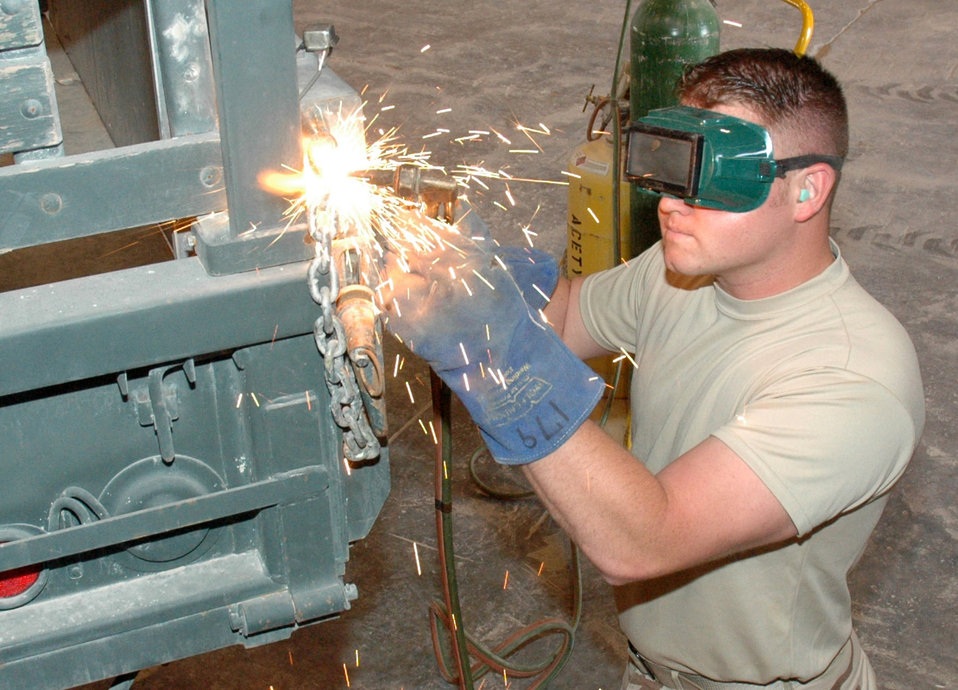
RED HORSE logistics hub supports Airmen uprange

Staff Sgt. Scott Crim cuts off old brackets with an acetylene torch in the back of a M-35 A2 truck Feb. 19 in Southwest Asia. Sergeant Crim is a 1st Expeditionary RED HORSE Group vehicle maintenance craftsman.